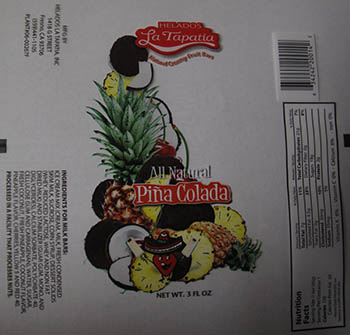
RECALLED – Ice cream products

March 19, 2014 – Product Recall – Helados La Tapatia, Inc. Recalls Products Because of Possible Health Risk.